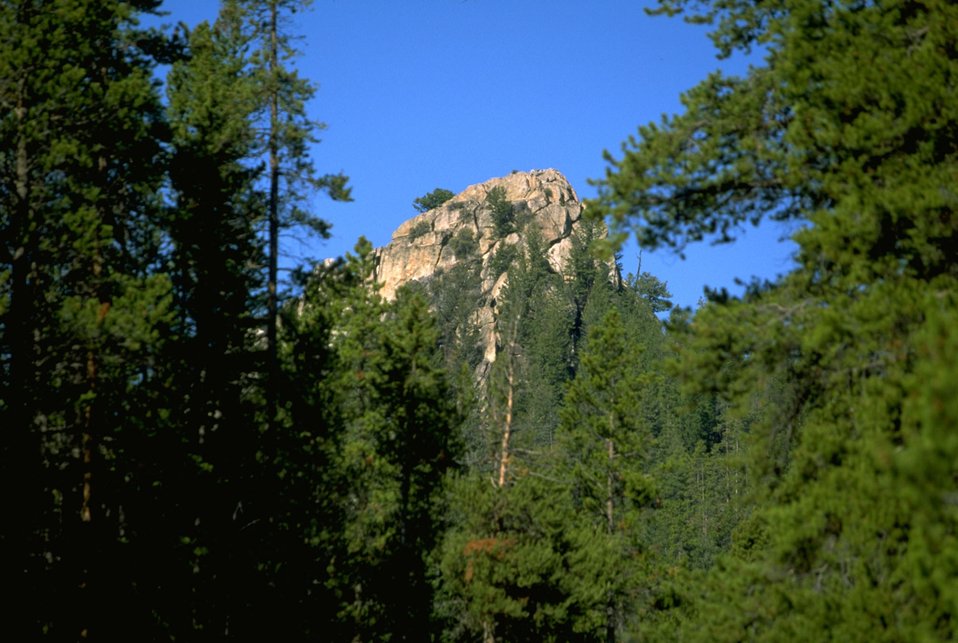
Rock formation surrounded by fir trees